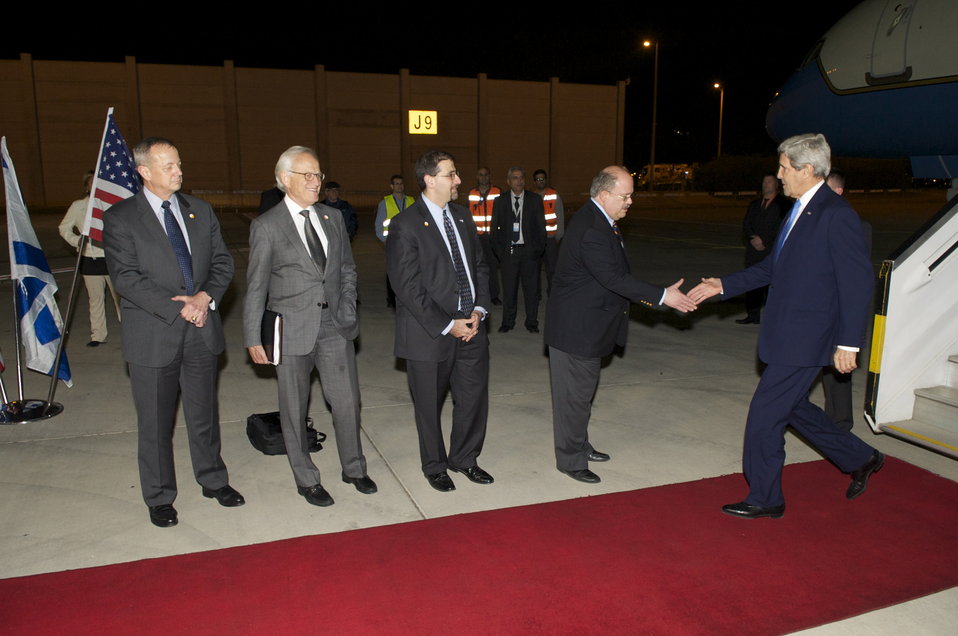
Secretary Kerry Arrives in Israel

U.S. Secretary of State John Kerry is greeted by Martin Peled-Flax of the Israeli Ministry of Foreign Affairs as he arrives at Ben Gurion International Airport in Tel Aviv on December 4, 2013. Joining him are members of the U.S. Middle East peace negotiating team: former General John Allen, U.S. Special Envoy for Israeli-Palestinian Negotiations Martin Indyk, and U.S. Ambassador to Israel Daniel Shapiro.